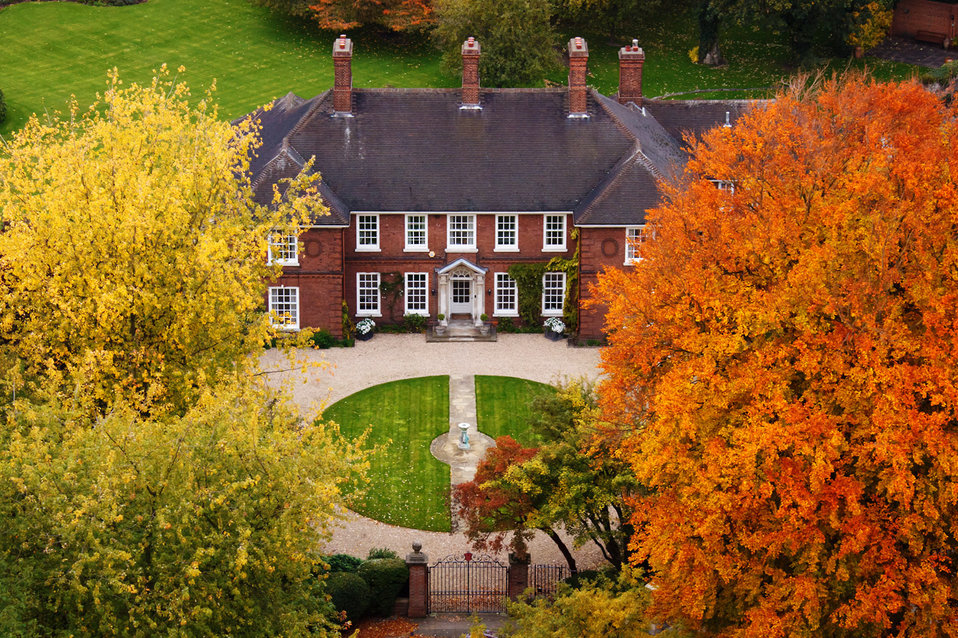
Mansion in autumn

Huge mansion with colorful trees in autumn.